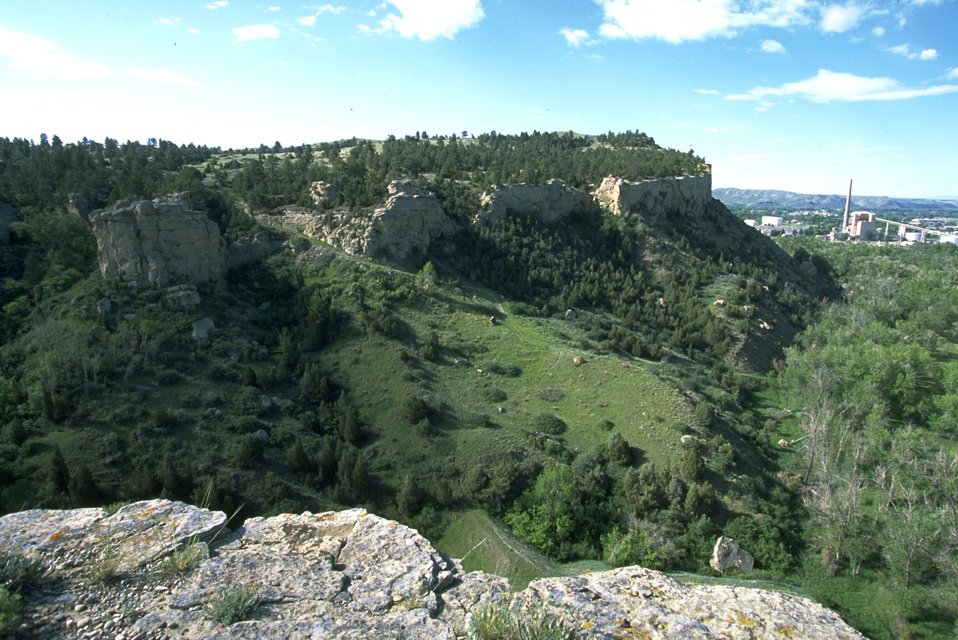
View of the rimrocks with the Billings oil refinery in the background - Four Dances Natural Area